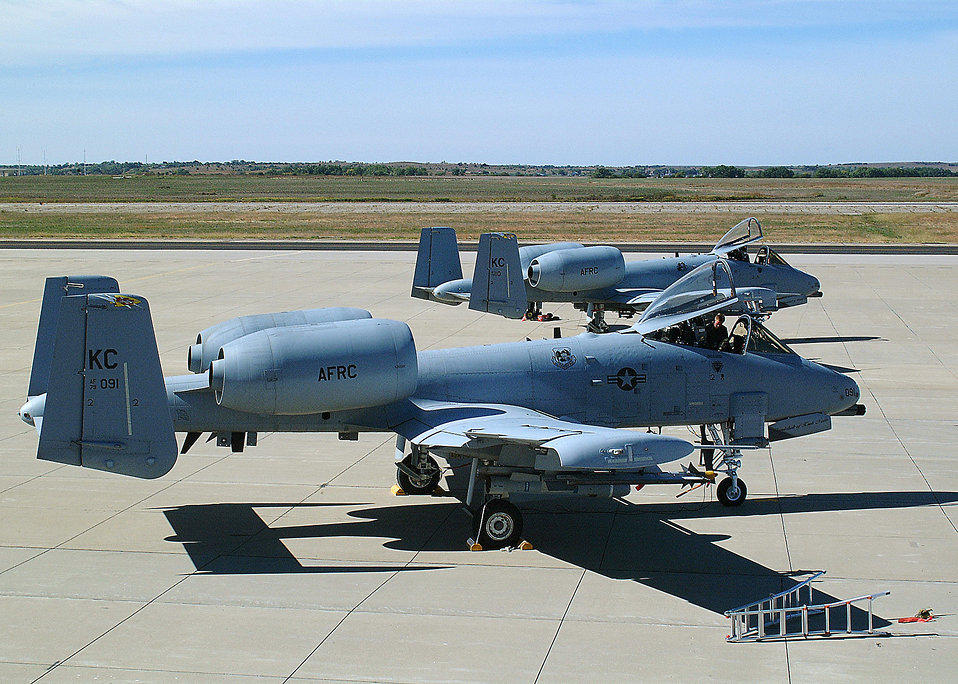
Hawgsmoke 2008

Twenty-five to 30 A-10 Thunderbolt IIs, like these, will participate in Hawgsmoke 2008 in Salina, Kan., Oct. 15 to 18, despite an Air Force time-compliance technical order issued Oct. 3 to inspect for wing cracks on 130 of the service's almost 400 A-10 aircraft. Hawgsmoke is an Air Force A-10 bombing and gunnery competition held every two years.